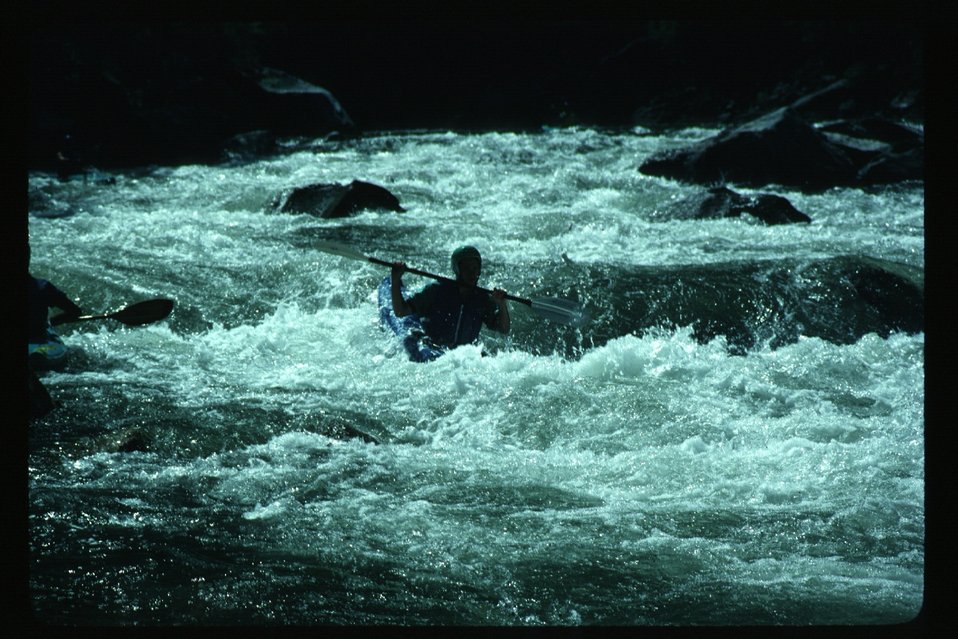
Main Payette Kayaker in white water Kayaking Four Rivers Field Office LSRD Lower Snake River District